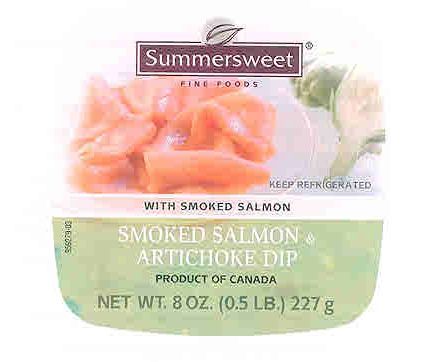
RECALLED - Dip and Mousse

April 15, 2011 - Product Recall - Charcuterie La Tour Eiffel Recalls Mousses and Dips.